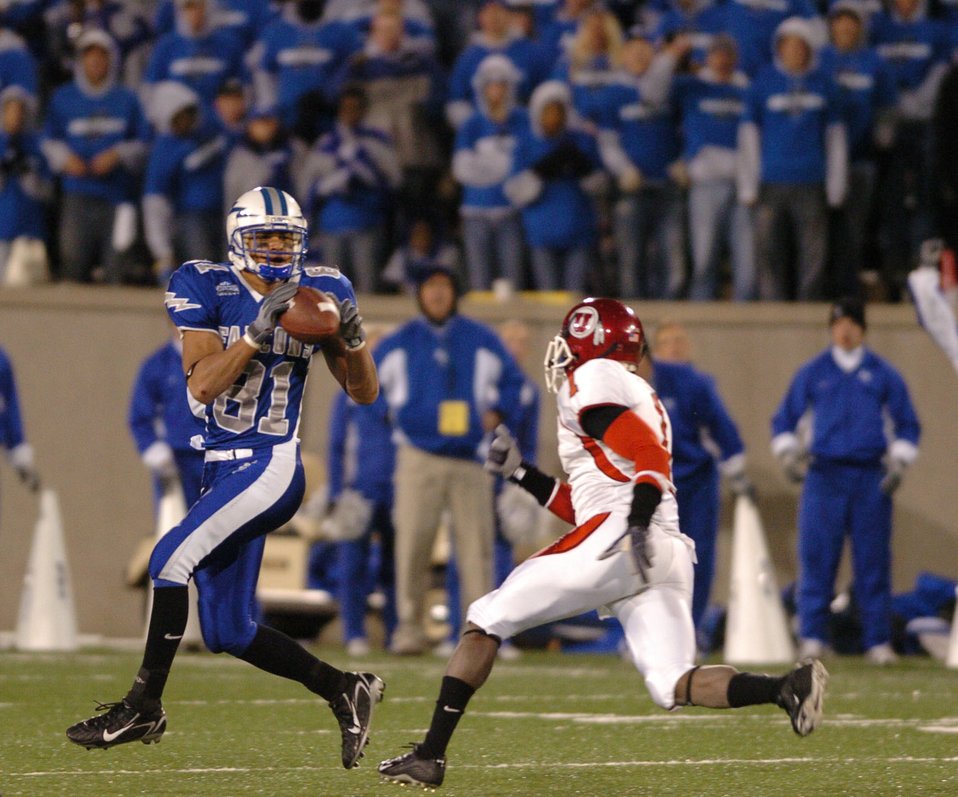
First Down

Air Force receiver Victor Thomson catches a Shaun Carney pass for 12 yards and a Falcon first down against the Utah Utes Nov. 18 in Colorado Springs, Colo. Carney threw for 218 yards and a touchdown on the day, but Utah's Louie Sakoda sealed the 17-14 win for the Utes with a game-ending field goal as time ran out on the Falcons.